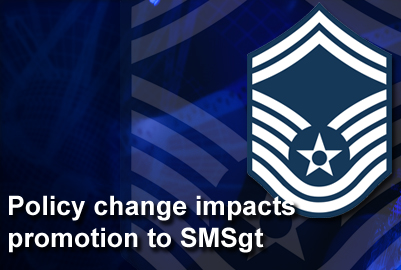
New policy change

Effective Jan. 1, a new policy will require the completion of resident Air Force Senior NCO Academy prior to promotion to senior master sergeant.